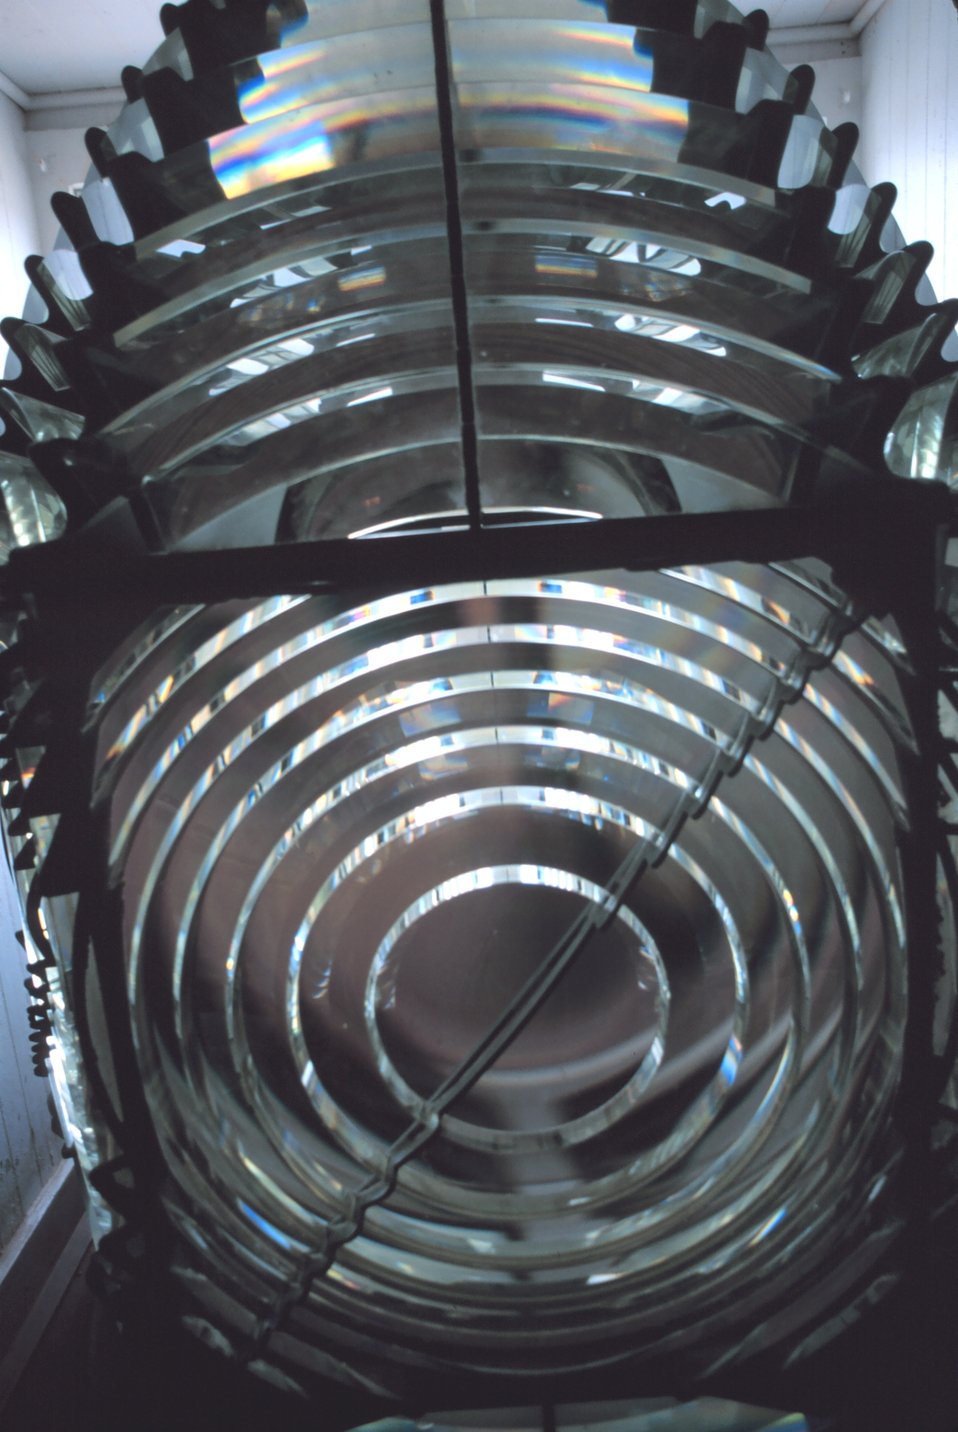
The exquisite workmanship of master lensmakers helped illuminate our coast. This Fresnel Lens can be viewed at the Hooper Strait Lighthouse at the Chesapeake Bay Maritime Museum.